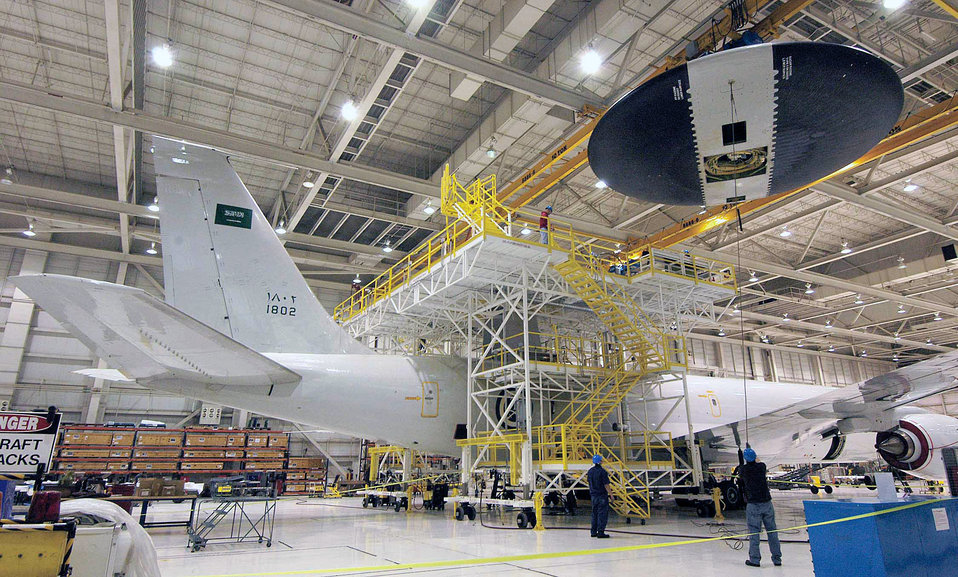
Tinker maintainers aid Saudi air force with E-3 repair

Maintainers ease the 30-foot-diameter rotodome onto a Royal Saudi air force E-3 March 10 at Tinker Air Force Base, Okla. Mechanics in the 566th Aircraft Maintenance Squadron lowered the rotodome to a work stand to replace the antenna pedestal turntable.